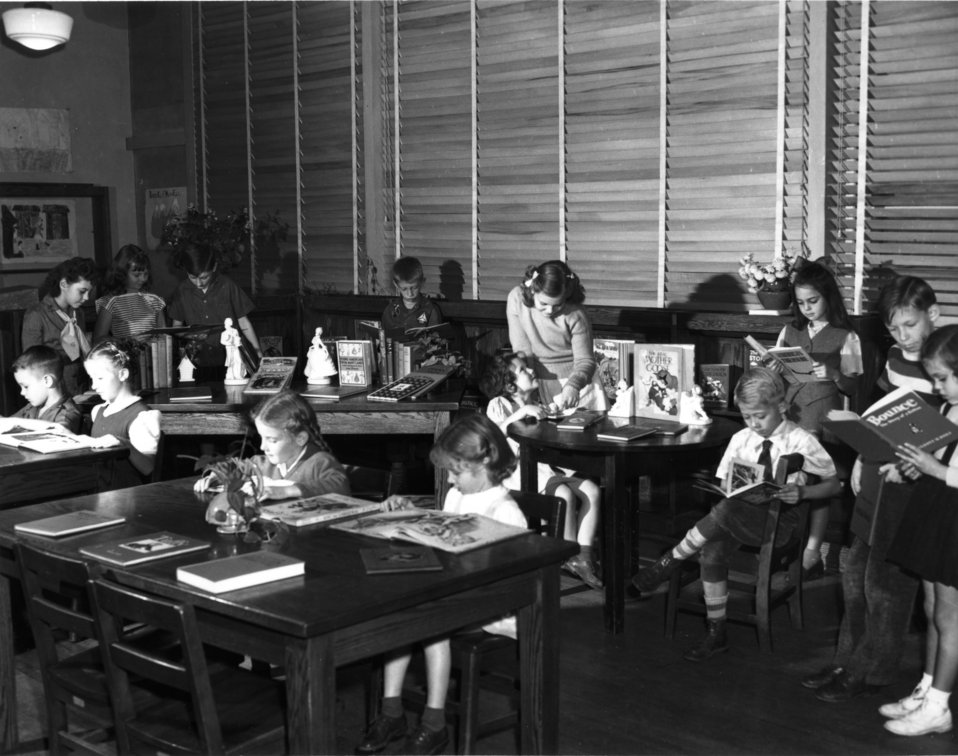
Schools at Oak Ridge